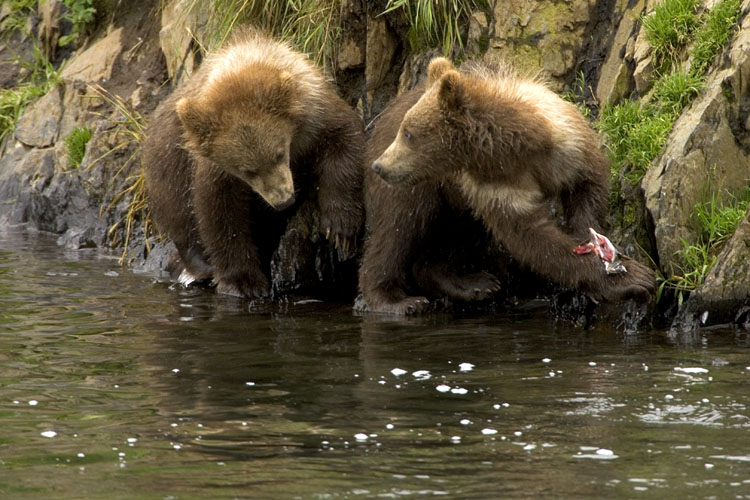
Wildlife of Kodiak Refuge